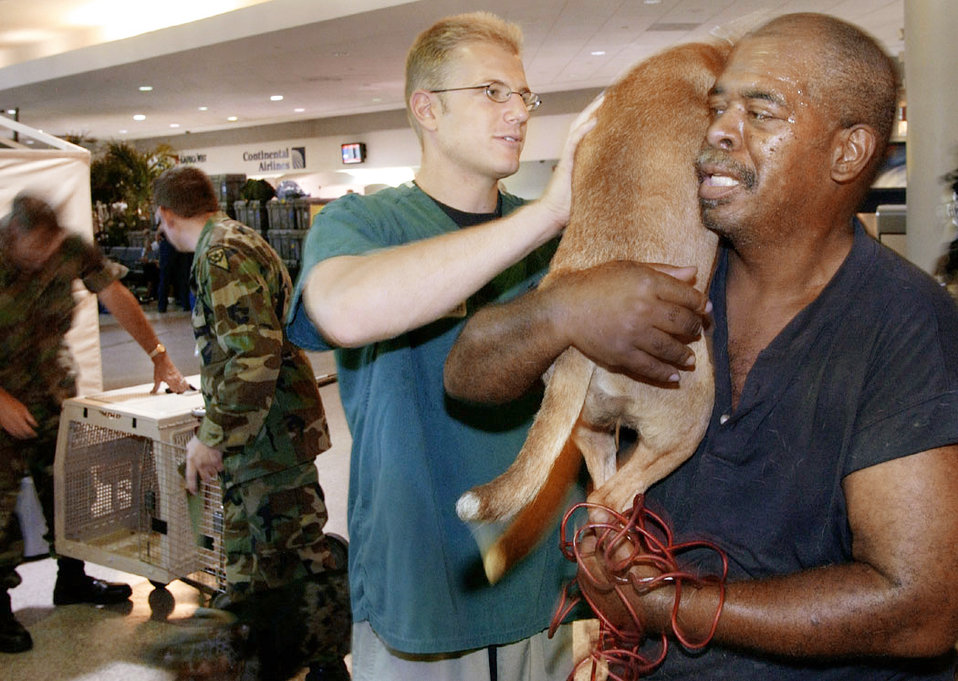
Animals in the aftermath

LOUIS ARMSTRONG NEW ORLEANS INTERNATIONAL AIRPORT, La. -- Staff Sgt. Kevin Sanada examines Pork Chop after his arrival here Sept. 6. Pork Chop was airlifted here with his owner before being evacuated to their final destination.